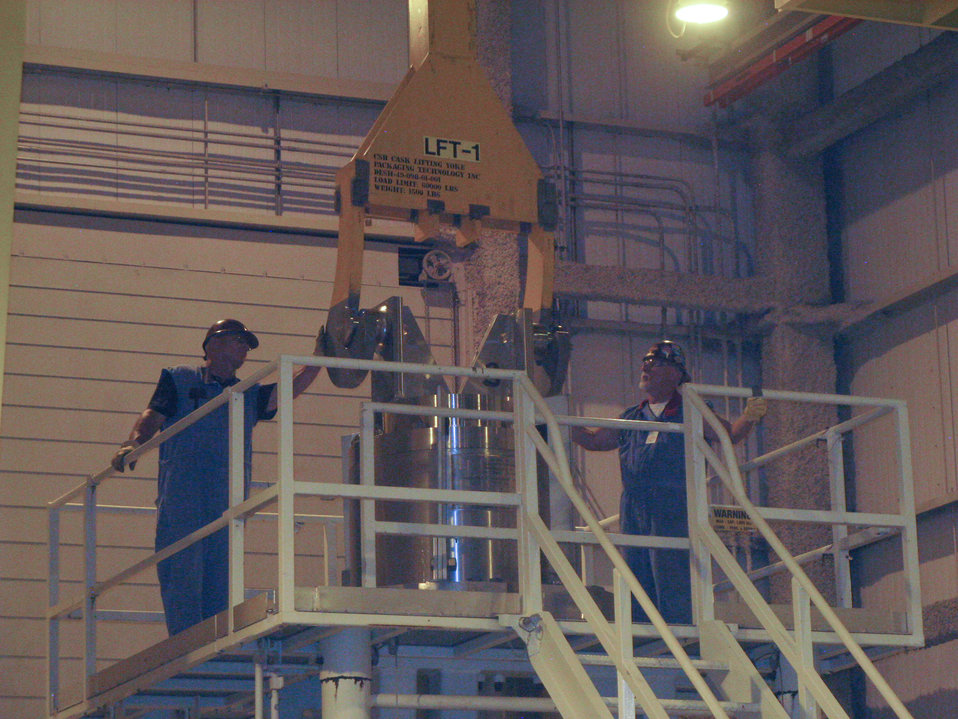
Moving Sludge

Workers started moving highly radioactive material, called sludge, away from the Columbia River in Richland, Washington, on Friday, July 13, marking a significant milestone in the cleanup of the Hanford Site.